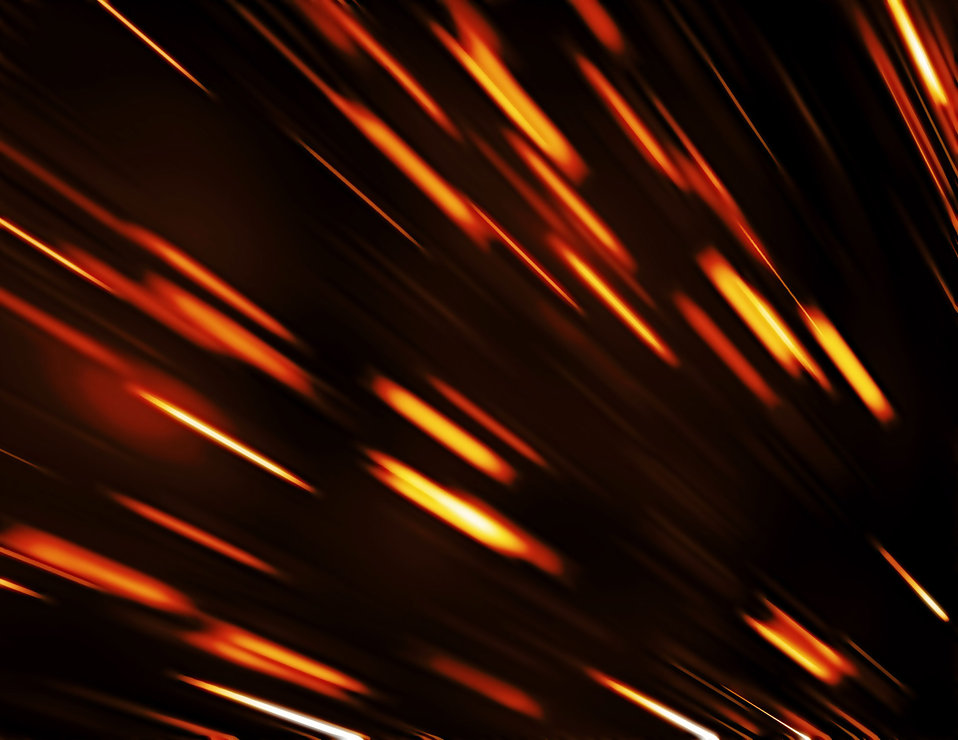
Sparks of fire in the wind

Background.